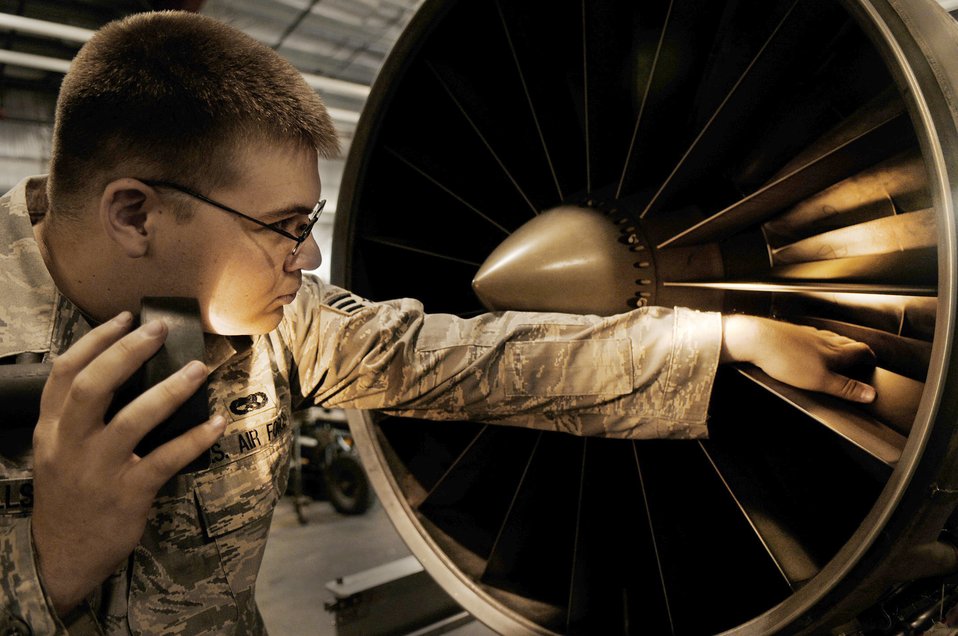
Shine a light?

Senior Airman William Hills performs an inlet inspection on an F-16 Fighting Falcon jet engine Aug. 12, 2009, at Eielson Air Force Base, Alaska. The check is performed during a routine maintenance assessment to look for nicks or foreign object damage to the blades. Airman Hills is an air space propulsions jet mechanic assigned to the 354th Maintenance Squadron.